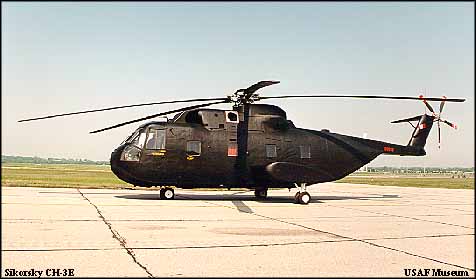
CH-3E

1960's -- The CH-3E is the Air Force version of the Sikorsky S-61 amphibious transport helicopter developed for the U.S. Navy. The Air Force initially operated six Navy HSS-2 (SH-3A) versions of the S-61 in 1962, eventually designating them CH-3A/Bs.